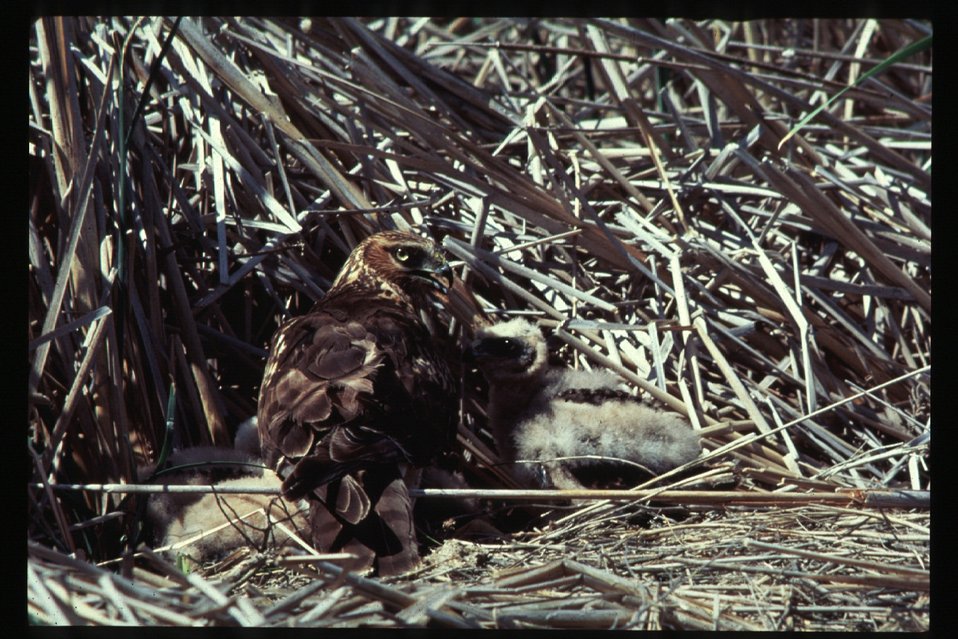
Northern Harrier and Young Birds of Prey National Conservation Area BOP NCA Owyhee Field Office LSRD Lower Snake River District